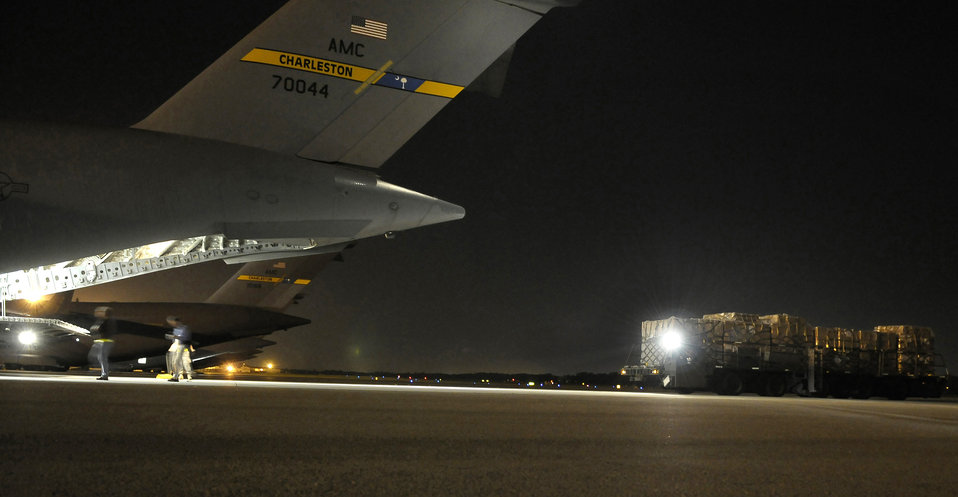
Airmen deliver 30,000 H1N1 prevention kits to South America

Airman use a 60K loader to transport 30,000 personal protection kits is loaded onto a C-17 Globemaster III at Charleston Air Force Base, S.C., May 8. The personal protection kits were shipped to Haiti, El Salvador, Guatemala, Honduras and Nicaragua. The mission was flown by Airmen from the 437th Airlift Wing at Charleston AFB, with command and control oversight provided by the 618th Tanker Airlift Control Center at Scott AFB, Ill.